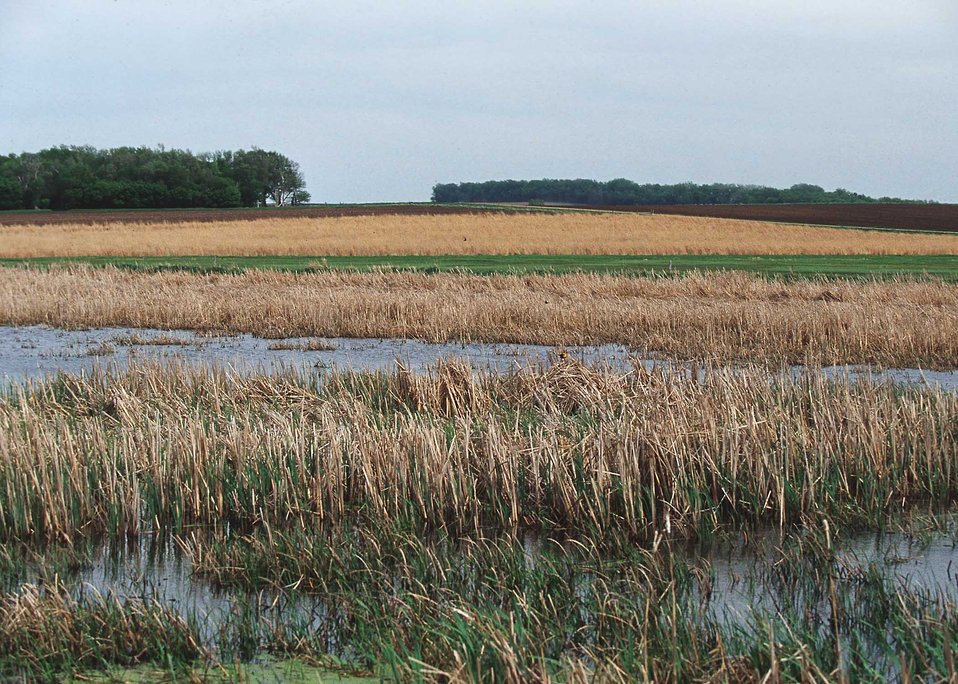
Cropland and wetlands provide wildlife habitat in South Dakota. Wetlands recharge groundwater, store floodwaters, provide a filter for sediment and chemicals as well as provide wildlife habitat.